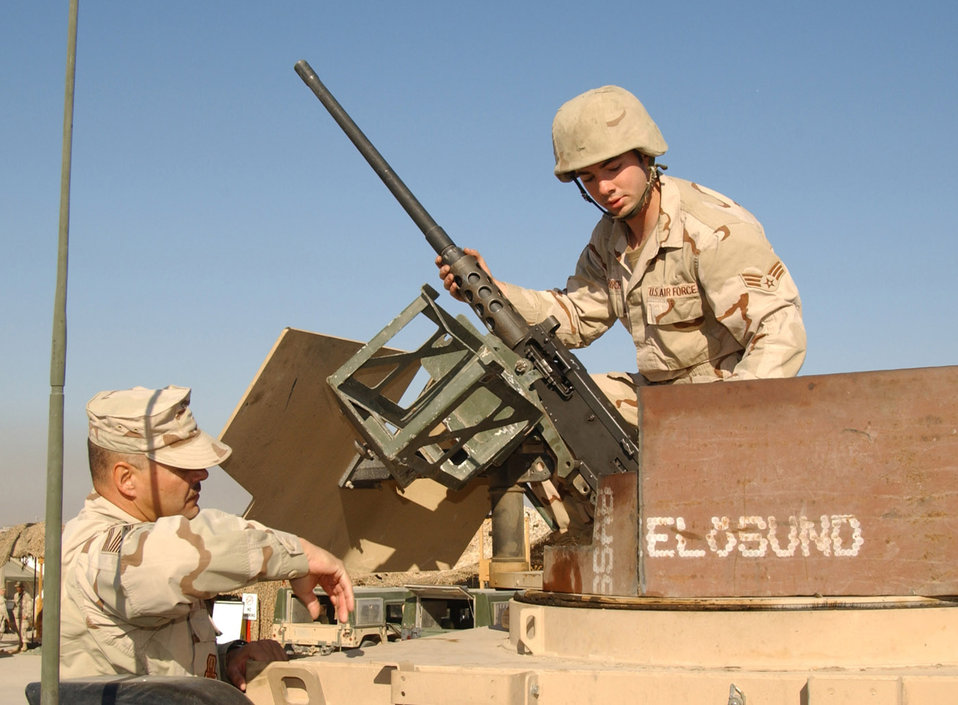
Gun truck

BALAD AIR BASE, Iraq (AFPN) -- Chief Master Sgt. Shawn Keller and Senior Airman Levi Parrish assemble a machine gun on the top of a gun truck. Both Airmen are with the 732nd Expeditionary Logistics Readiness Squadron.